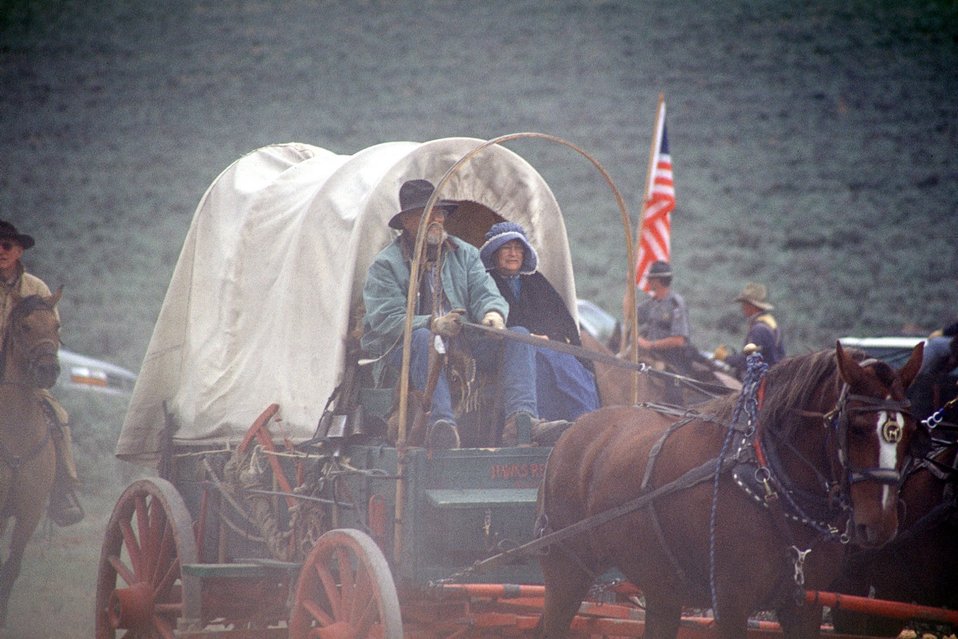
NHOTIC 10th Anniversary, wagon train reenactment. Pioneers and covered wagon on the Oregon Trail.